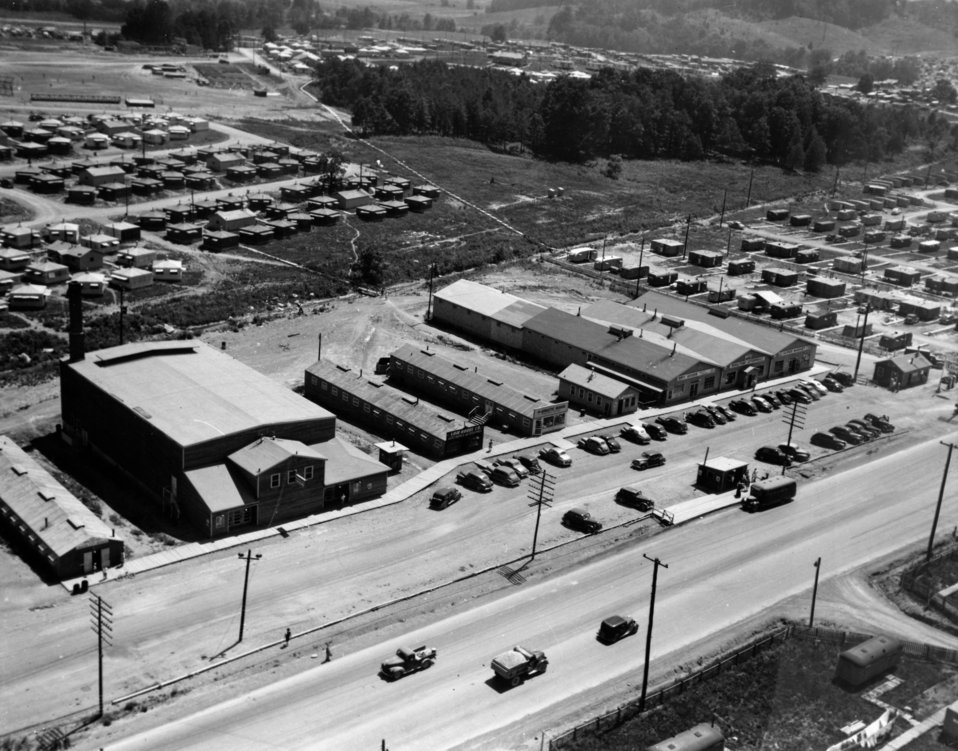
Aerial of Oak Ridge